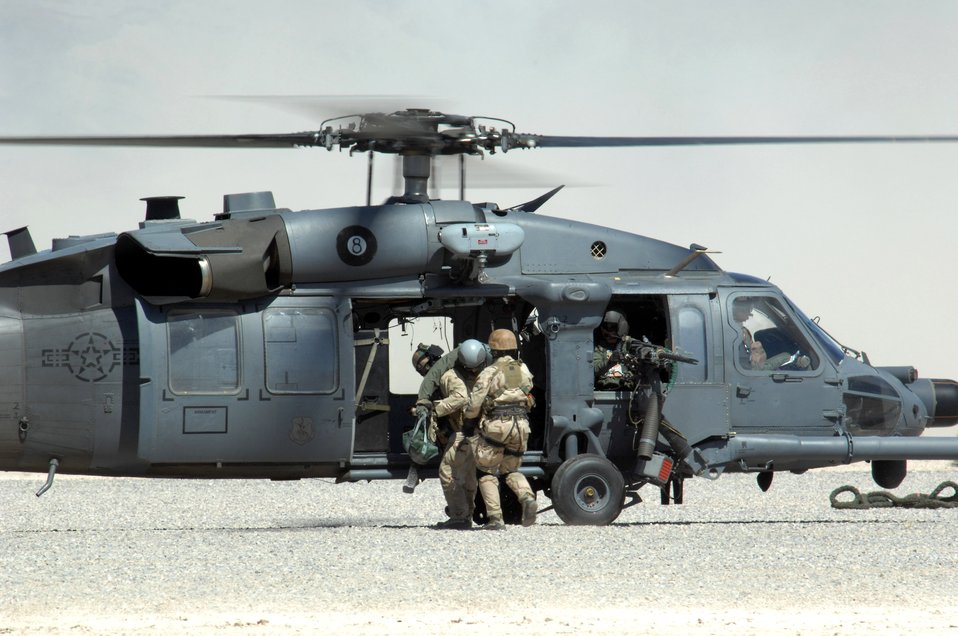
Show of force

Pararescuemen from the 58th Rescue Squadron at Nellis Air Force Base, Nev., demonstrate combat search and rescue maneuvers while rescuing a downed pilot during a firepower demonstration Sept. 14 on the Nevada Test and Training Range. The demonstration gave the general public a close-up and realistic view into the Air Force's ability to perform its wartime mission.